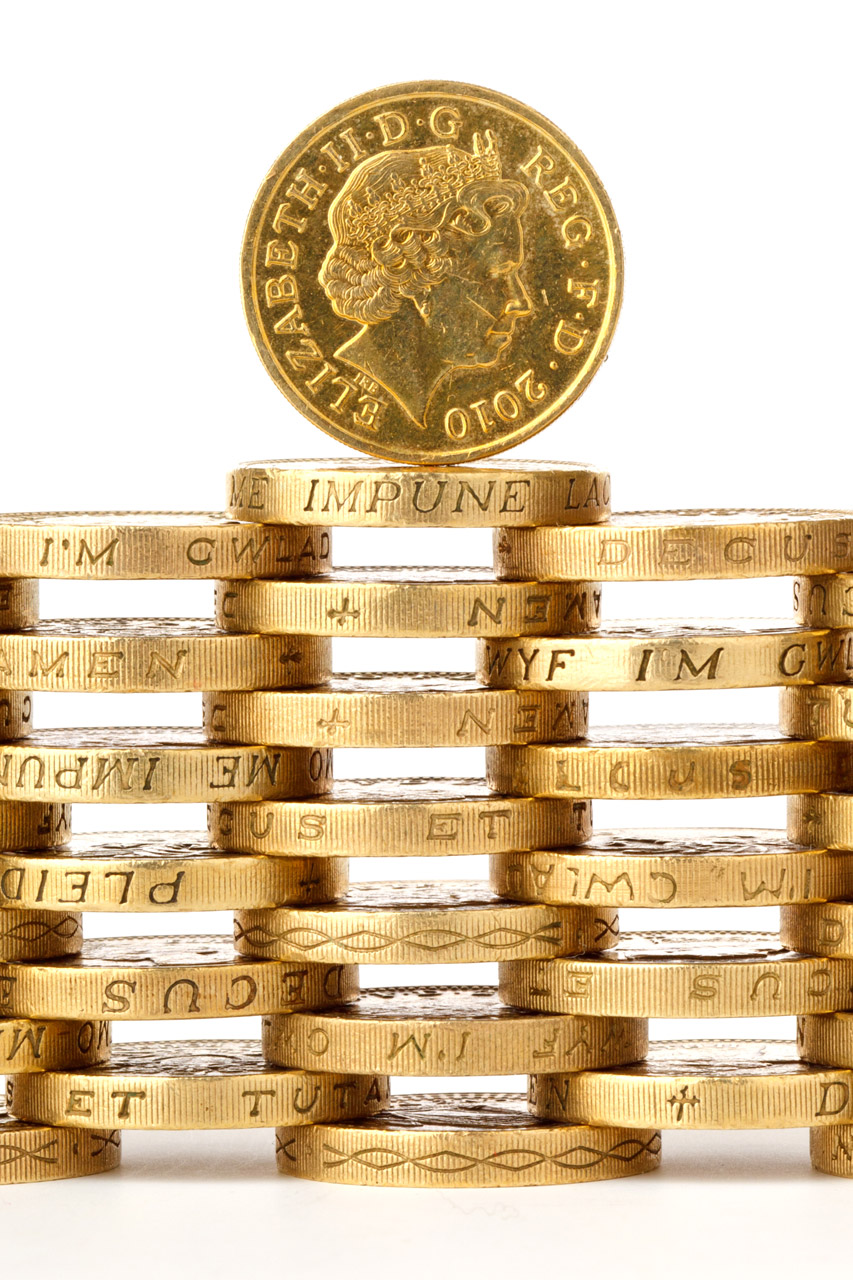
Queen on british pounds

Queen's head on british one pound coins.